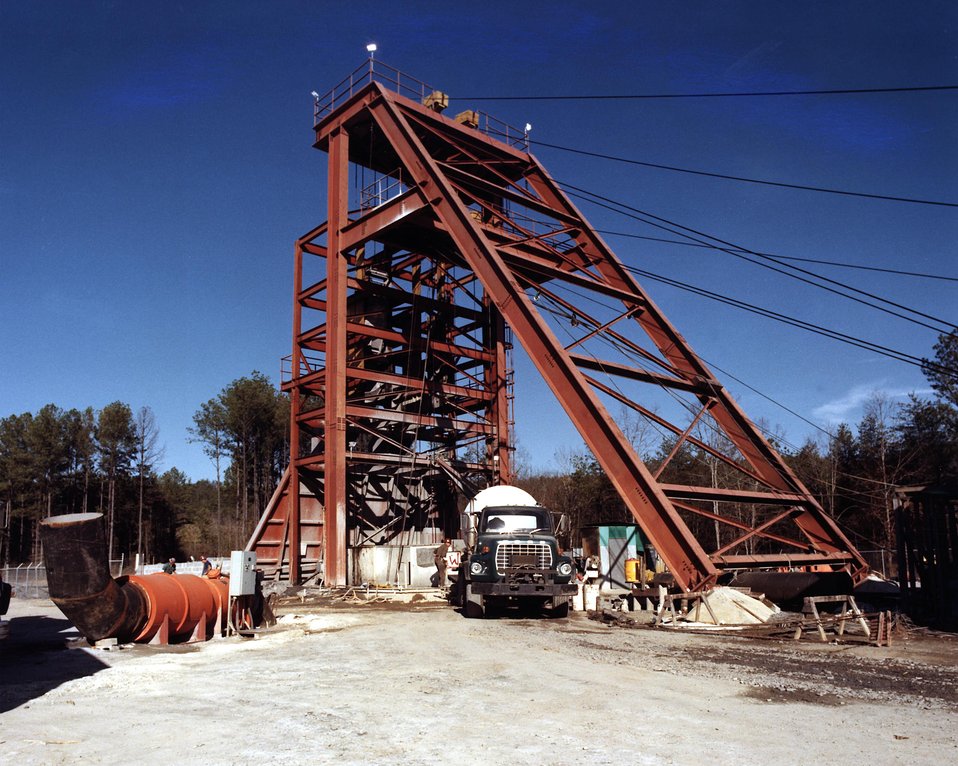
HEAD FRAME AT THE DEPARTMENT OF ENERGY'S SHAFT BORER PROJECT NEAR OAK GROVE ALABAMA.

THE BORER MACHINE IS CONSTRUCTING THE 1160 FT INTAKE SHAFT AT U. S. STEEL OAK GROVE #4 MINE.